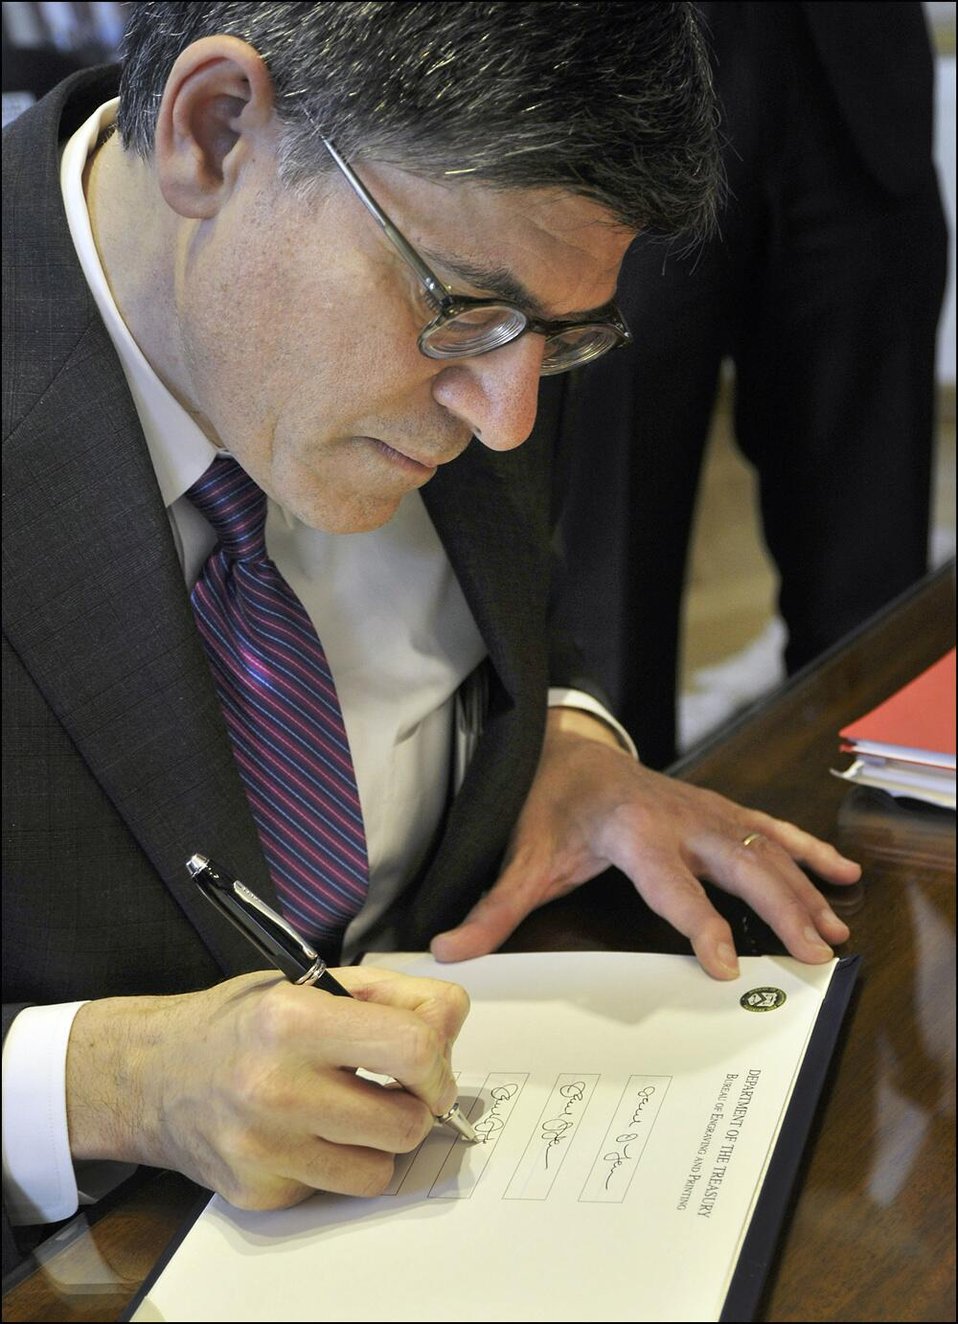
Secretary Lew provides his signature for printing on U.S. currency